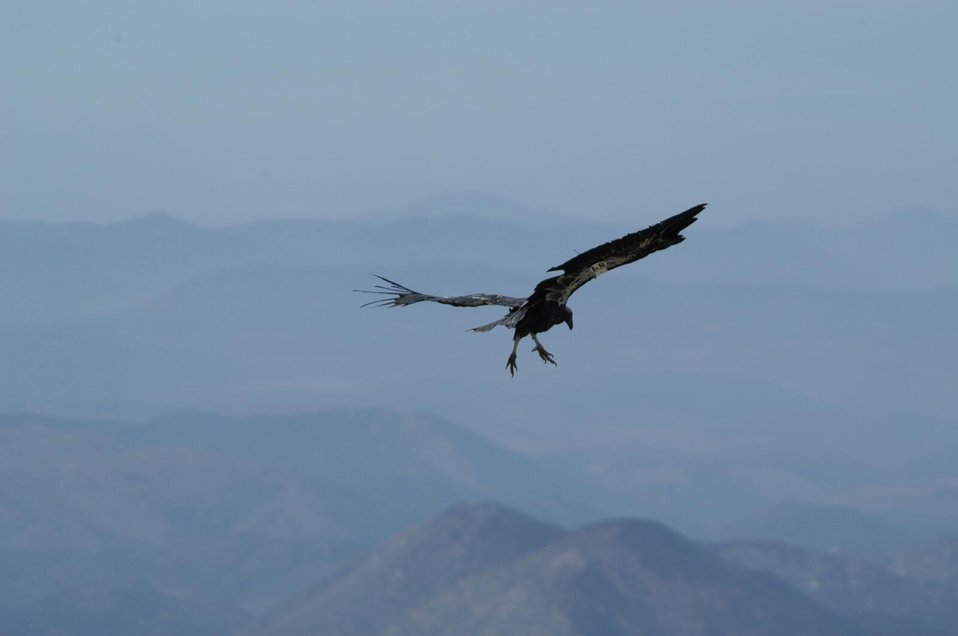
Condor in Flight